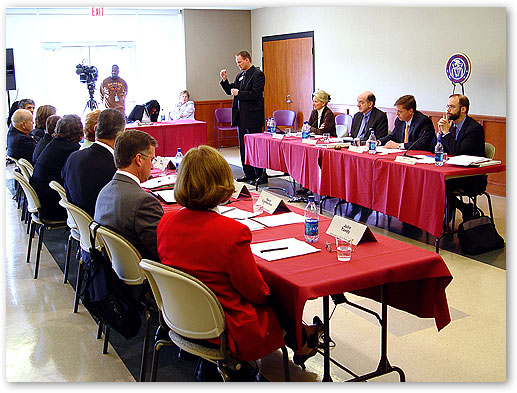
FCC Open Commission Meeting, Keller, Texas, February 10, 2006.